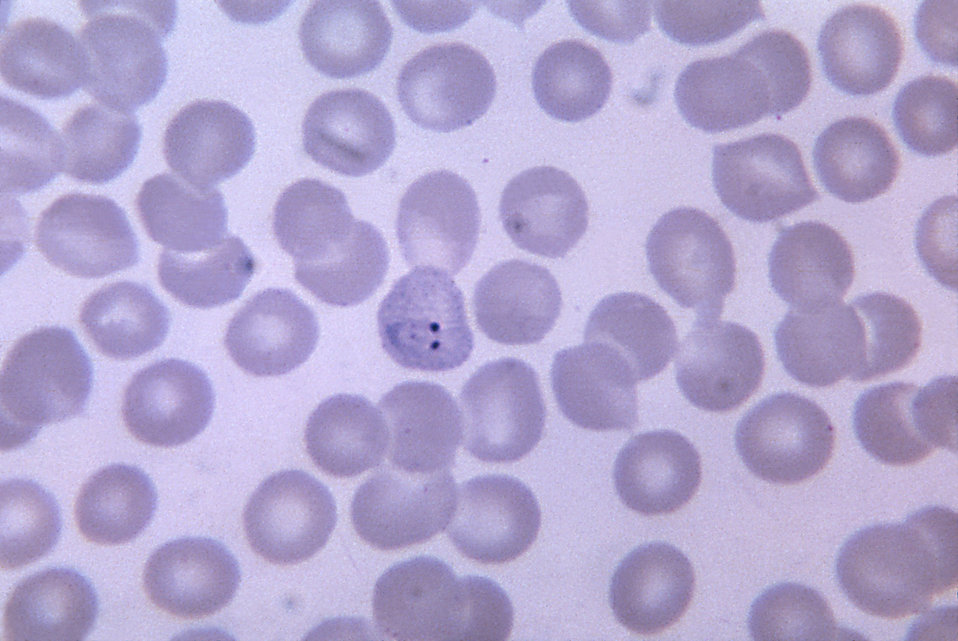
This thin film blood smear micrograph depicts a P. vivax ring with 2 chromatin dots; Magnified 1125X.